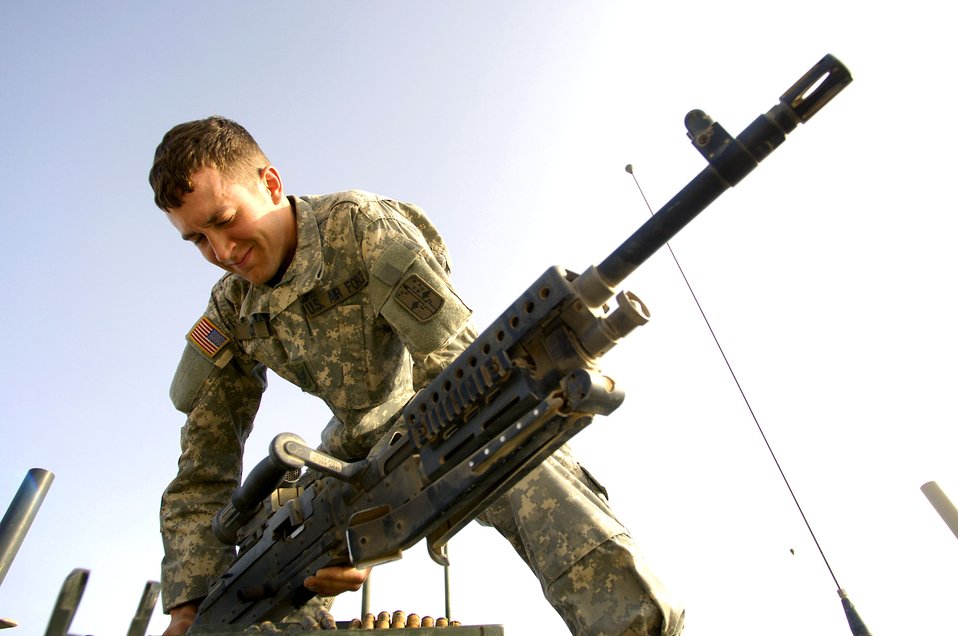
Stryker brigade combat team on patrol

Staff Sgt. Chris Pierce mounts a M240 machine gun to the top of a Stryker vehicle before going on patrol near Sinjar, Iraq on May 14, 2006. Sergeant Pierce is a joint tactical air controller assigned to a U.S. Army Stryker brigade combat team.